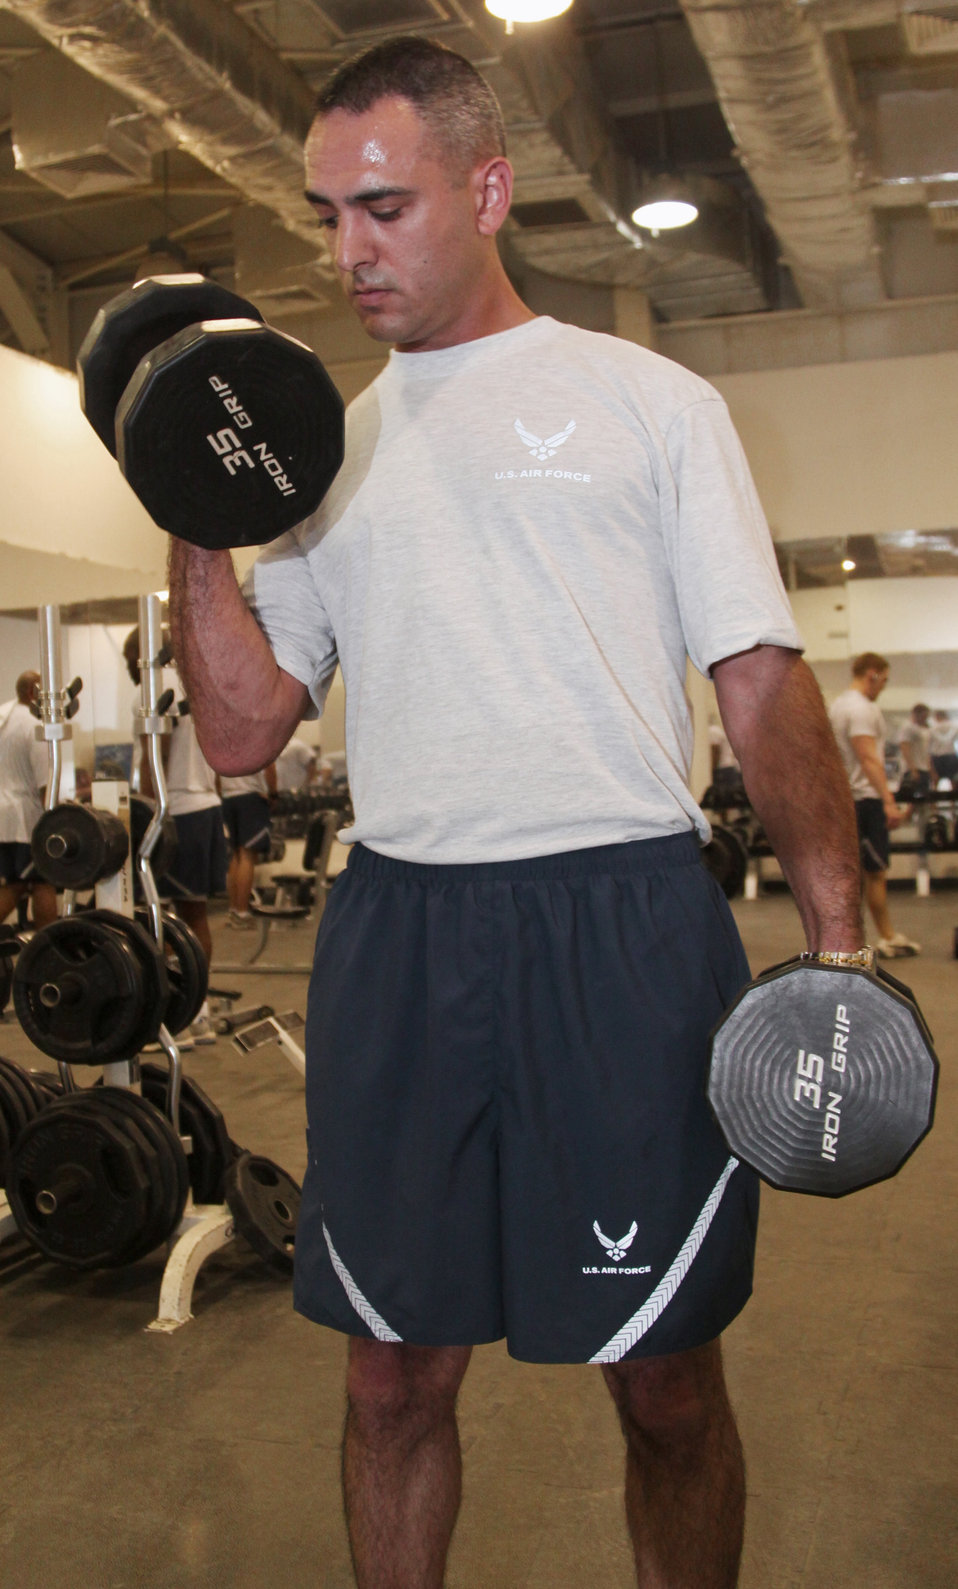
Airman field-tests modified PT uniform in Iraq

Senior Airman James Debiase puts the Air Force's modified physical training uniform to the test at the fitness center April 13 at Joint Base Balad, Iraq. Airman Debiase was selected to field-test the PT uniform while deployed here from Dyess Air Force Base, Texas, and to provide feedback to leadership at the end of April. Airman Debiase is a 332nd Expeditionary Civil Engineer Squadron emergency manager, and his hometown is Glastonbury, Conn.